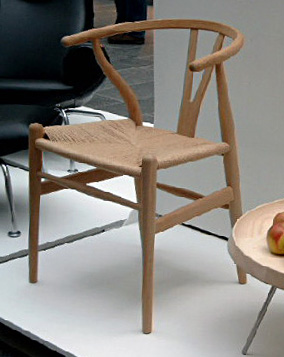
Nederlands: Y-stoel of vorkbeenstoel van Hans Jørgensen Wegner; model CH 24; 1950